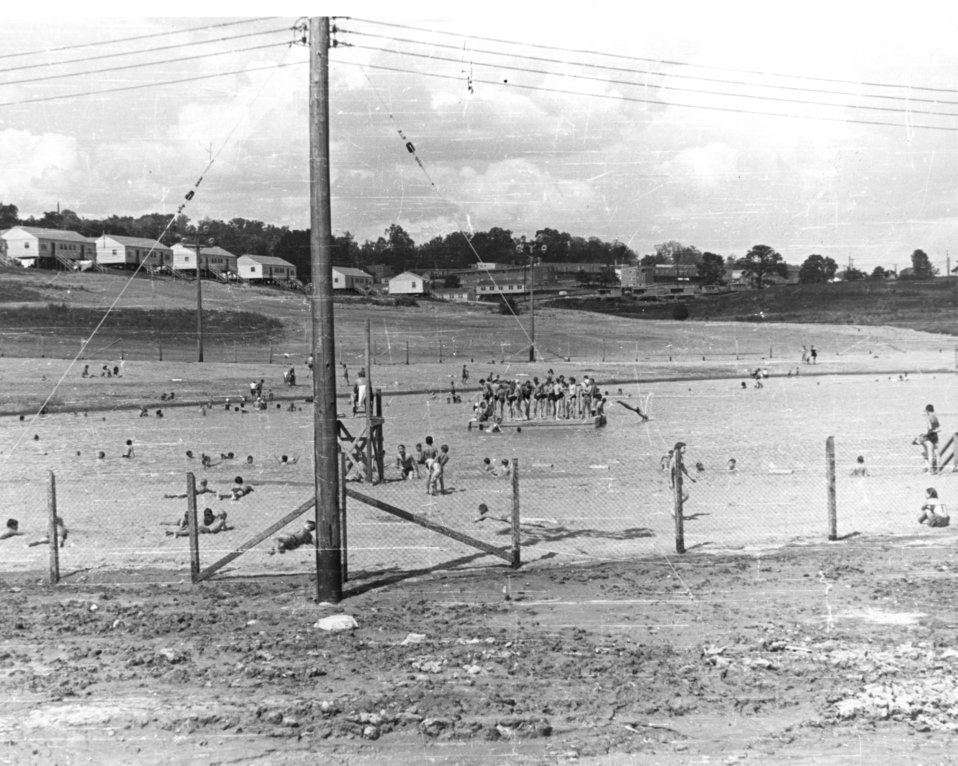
Recreation at Oak Ridge